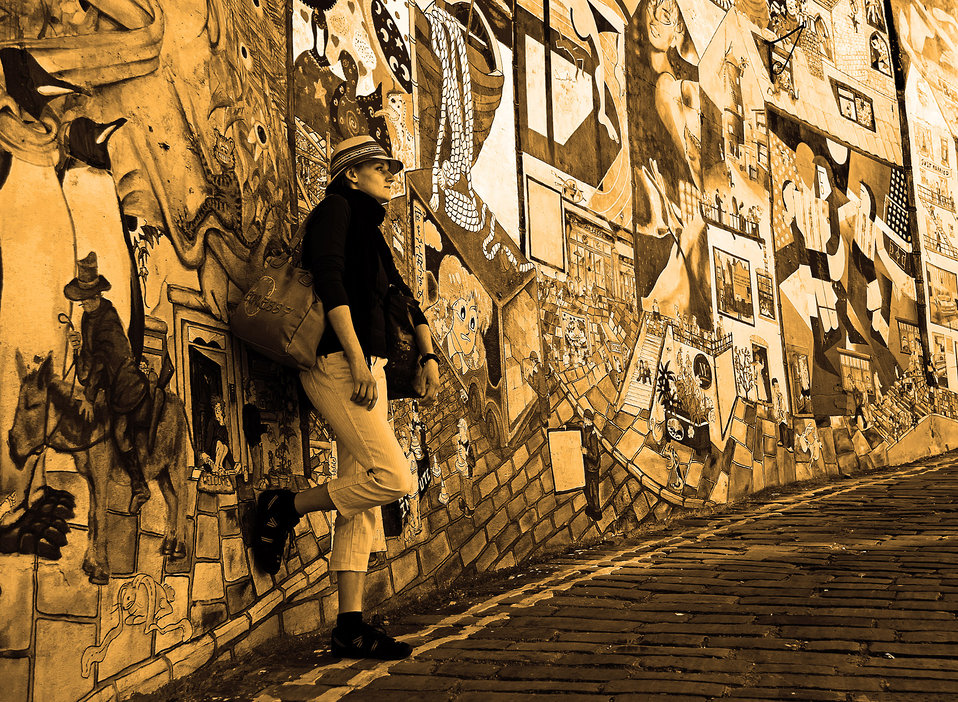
Woman and wall.